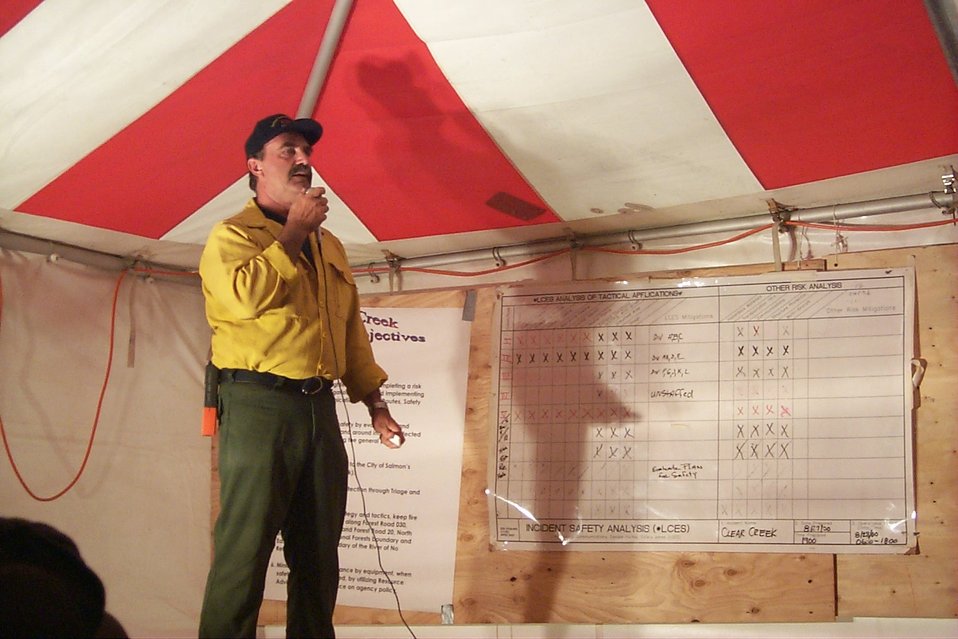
Incident briefing Fire Clearwater Fire Salmon Field Office USRD Upper Snake River District